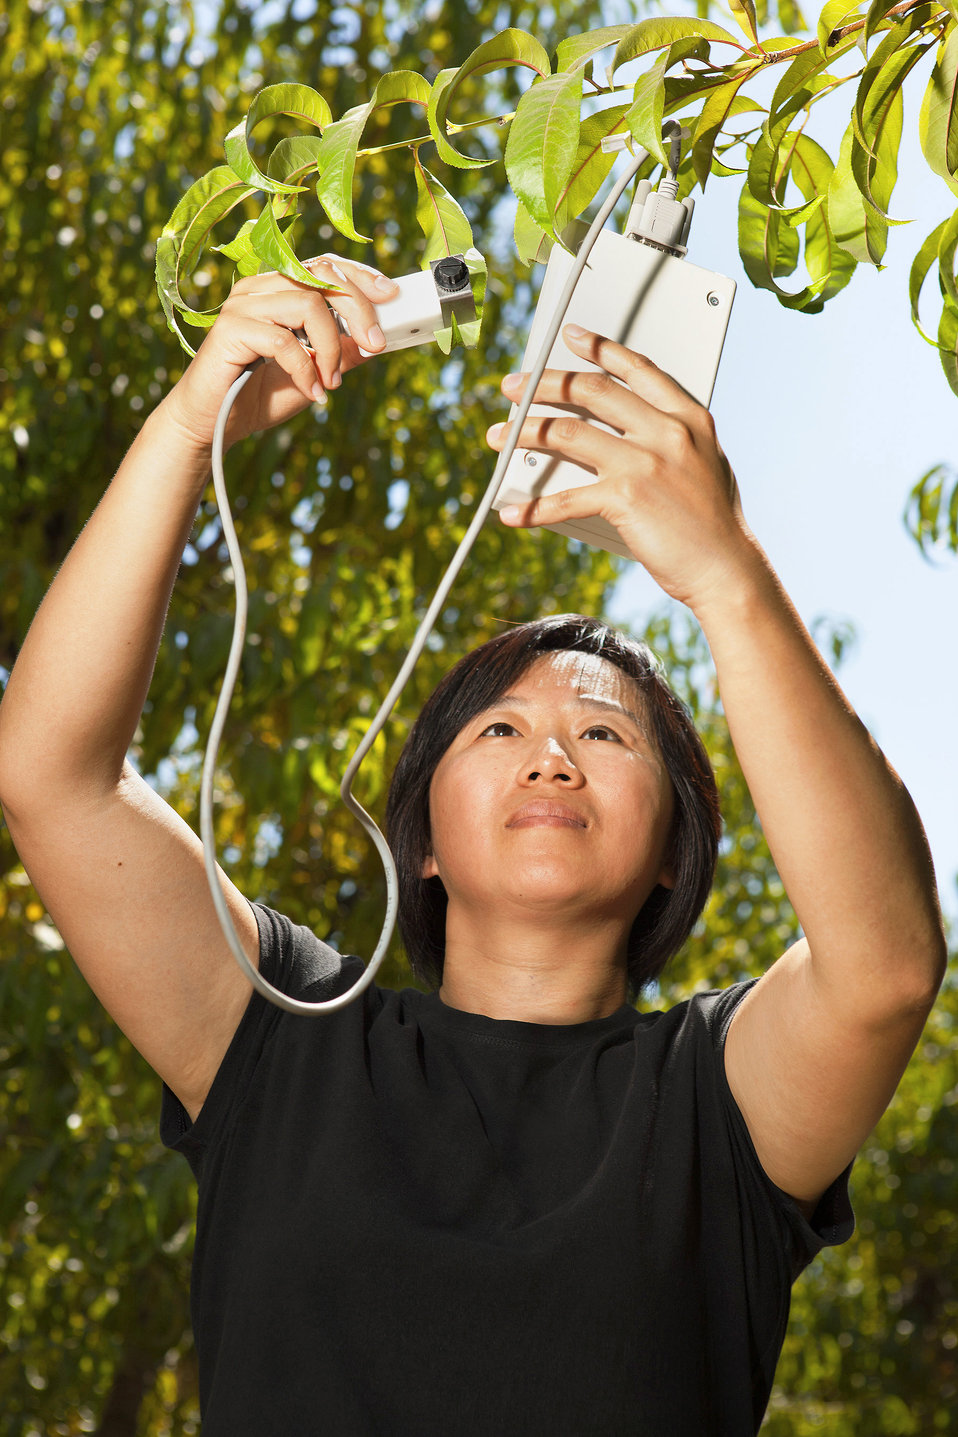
U.S. Department of Agriculture (USDA) Agriculture Research Service (ARS) agricultural engineer Huihui Zhang measures peach tree leaf stomatal (pore) conductance, a measure of water level inside the leaves and therefore water stress, in the San Joaquin Valley, CA on Jan. 3, 2004.